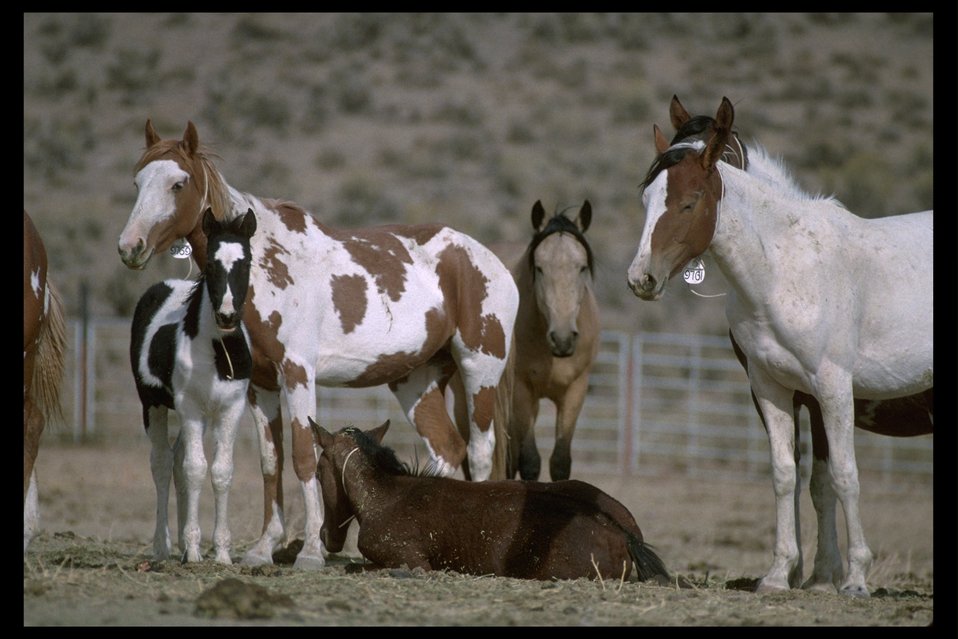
Colorful Pinto Wild Horses at Burns Wild Horse Corrals in South Steens Horse Management Area.